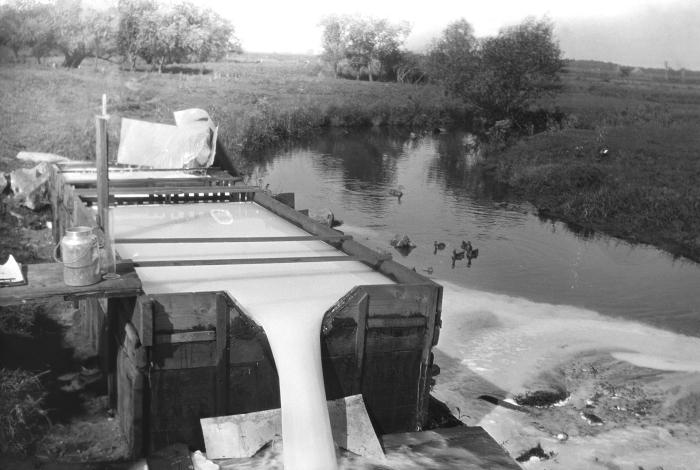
This historic 1932 photograph depicted a "weir" measurement system that had been implemented, in order to measure and monitor levels of creamery waste that was being dumped into a stream near Farmington, Minnesota. The weir method is a way of determining the volume of a fluid by measuring its flow rate, e.g., gallons/minute.